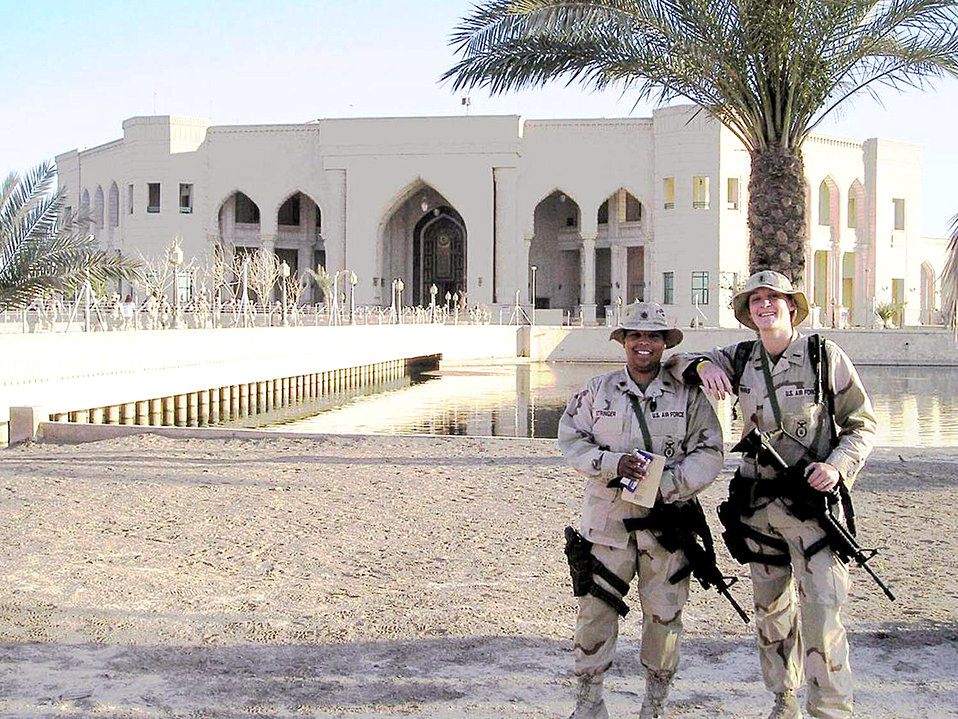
Operation Iraqi Freedom

CAMP UR, Iraq -- Maj. Michelle Stringer (left) and 1st Lt. Sarah Parris train Iraqi troops at this austere camp. Both are deployed here from the 78th Security Forces Squadron, Robins Air Force Base, Ga.